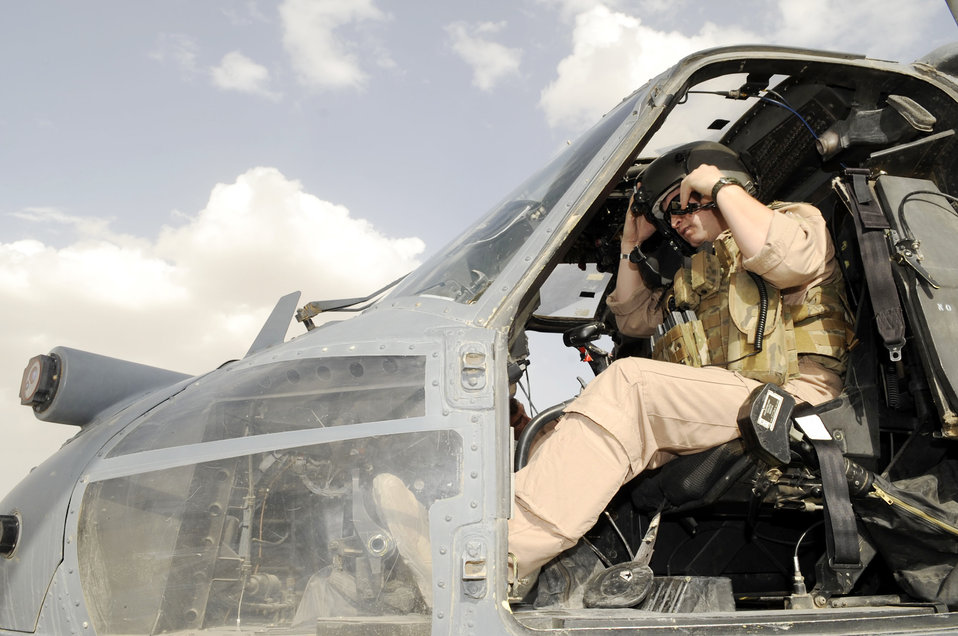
Rescue crews fly into hostile zones to save lives

Capt. Rob Roth conducts preflight checks inside of a HH-60G Pave Hawk helicopter March 5, 2010, at Kandahar Airfield, Afghanistan. Captain Roth is a 66th Expeditionary Rescue Squadron mission pilot from Nellis Air Force Base, Nev.